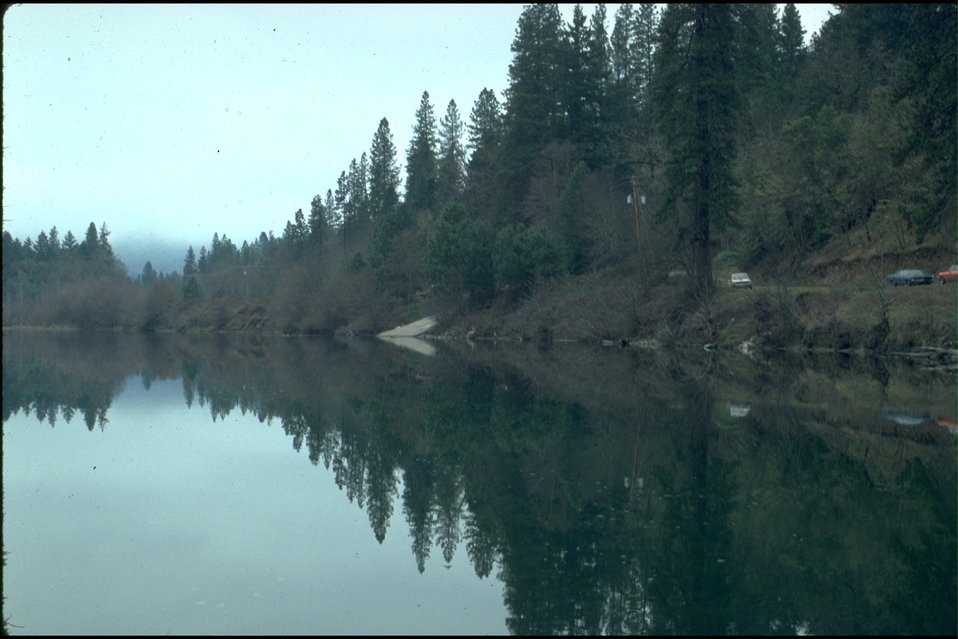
Ferry Park boat ramp on the Hellgate Recreation area.